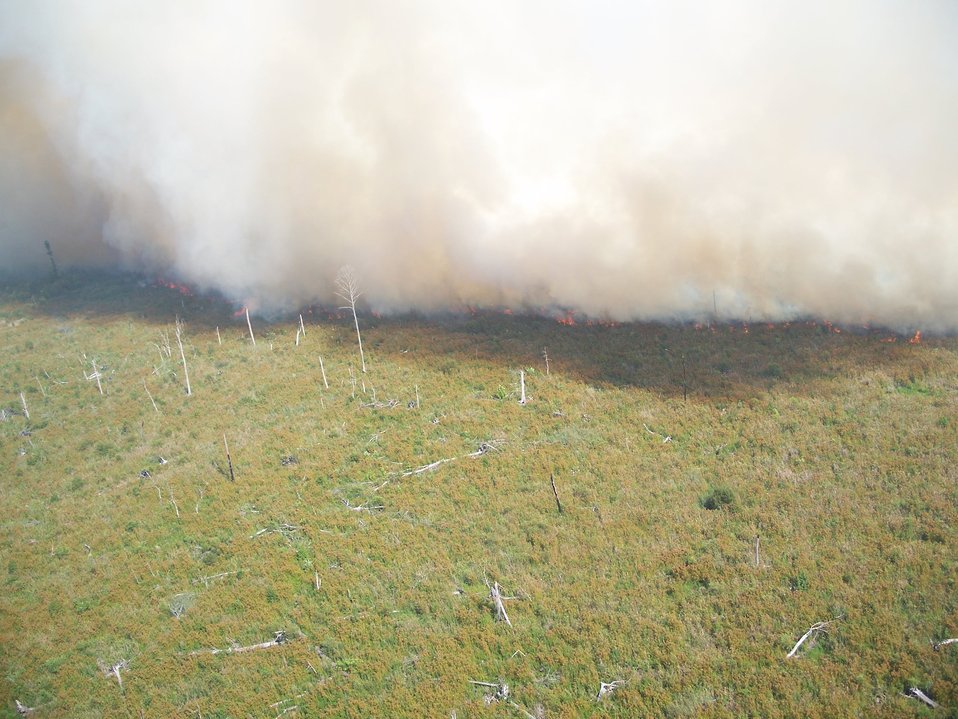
Smoke front on Dismal Swamp

Suffolk, VA, August 2011: A wall of smoke marks the edge of the Lateral West Fire burning on Great Dismal Swamp National Wildlife Refuge. Swamp fires like this burn for months because they burn deep in organic peat soils.